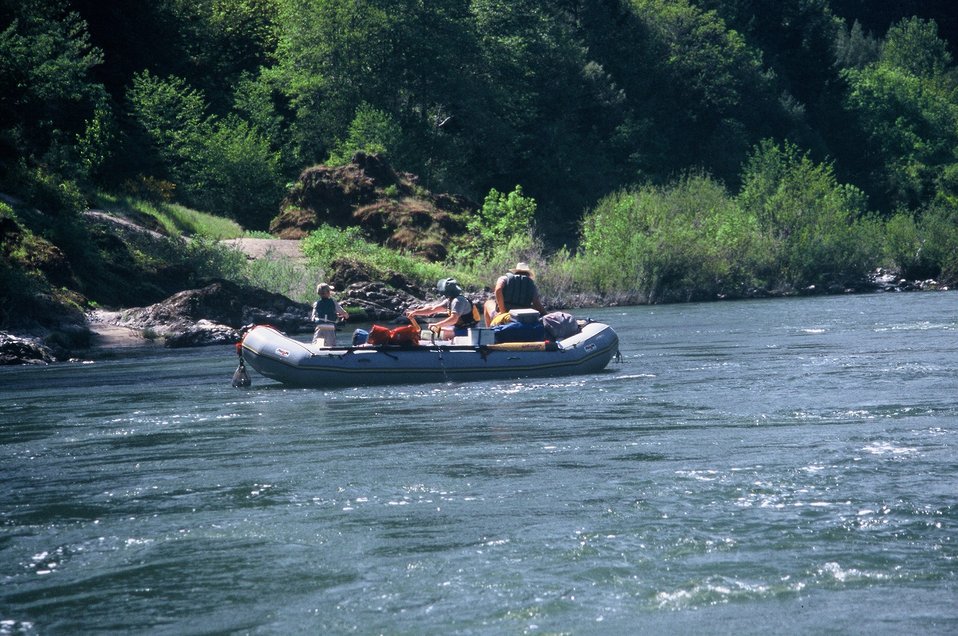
Wild section of the Rogue River from Grave Creek to Foster Bar May 19 to May 22.